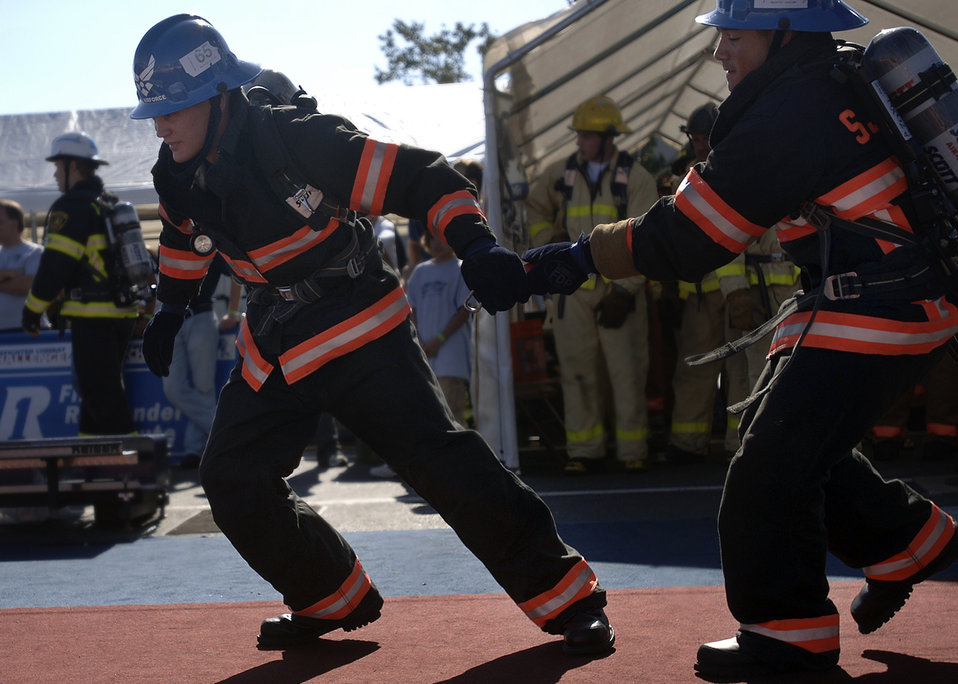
Relay Race

Staff Sgt. Keith Hutton passes a flash light to Airman 1st Class Joshua Huff during the relay race portion of the Firefighter Combat Competition at Morrow, Ga., Oct. 13, 2006. The competition is a national competition with over 450 firefighters from around the US.